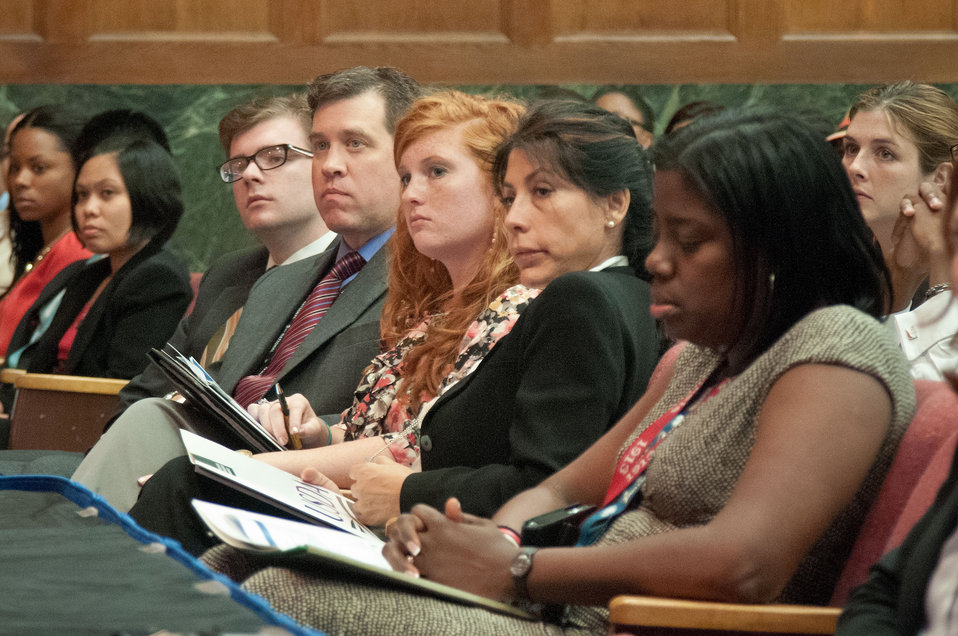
Audience members and interns had the opportunity to hear U.S. Department of Agriculture Secretary Tom Vilsack and Deputy Agriculture Secretary Dr. Kathleen Merrigan speak at the same event during the United States Department of Agriculture Intern Day and Panel Discussion, “Transforming USDA’S Tomorrow Today” in Washington, D.C., on Wednesday, July 11, 2012.